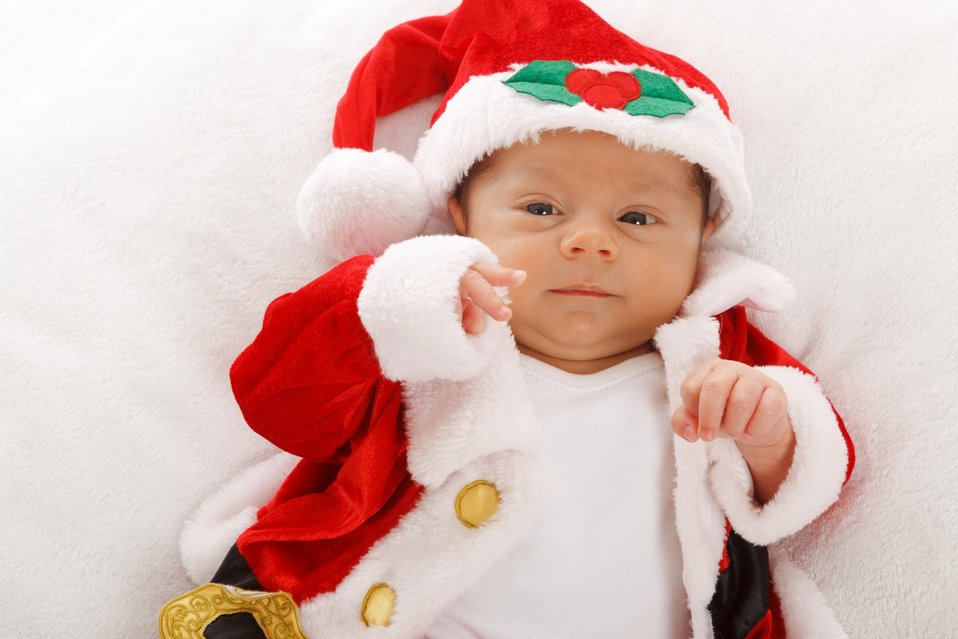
Relaxed santa baby

A little baby wearing a santa claus costume is relaxed.